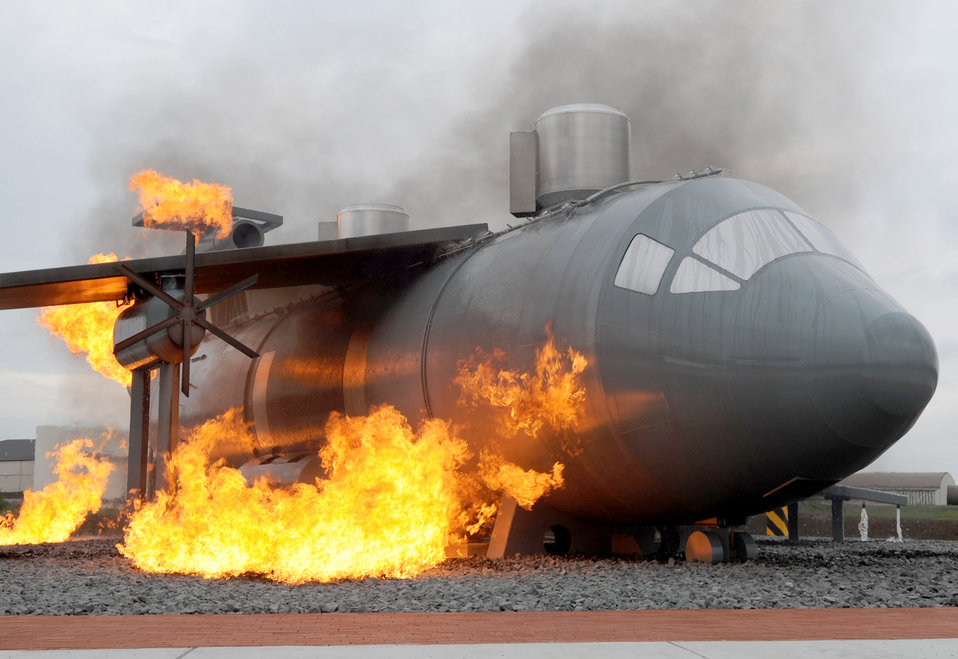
Aircraft Fire Training Site

A new aircraft fire training burn site is engulfed in flames for construction team members and fire trainers to view Sept. 9, 2010 at Ramstein Air Base, Germany. The new burn site is the only aircraft training site in Germany.